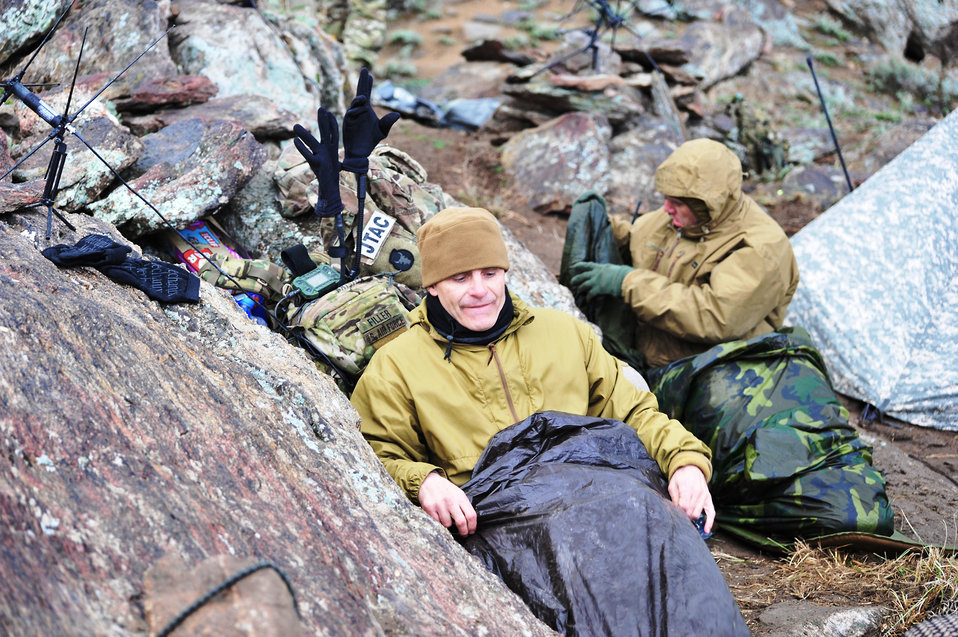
JTACs

Lt. Col. Brian Filler (left) and Tech. Sgt. Jonathan Oliver prepare to sleep in austere conditions upon a remote mountaintop March 28, 2011, during Operation Bull Whip in Laghman province, Afghanistan. Colonel Filler is an air liaison officer. Sergeant Oliver is a joint terminal attack controller. Both Airmen are assigned to Bagram Airfield's 817th Expeditionary Air Support Operations Squadron, and were responsible for controlling air assets during the clearing operation.